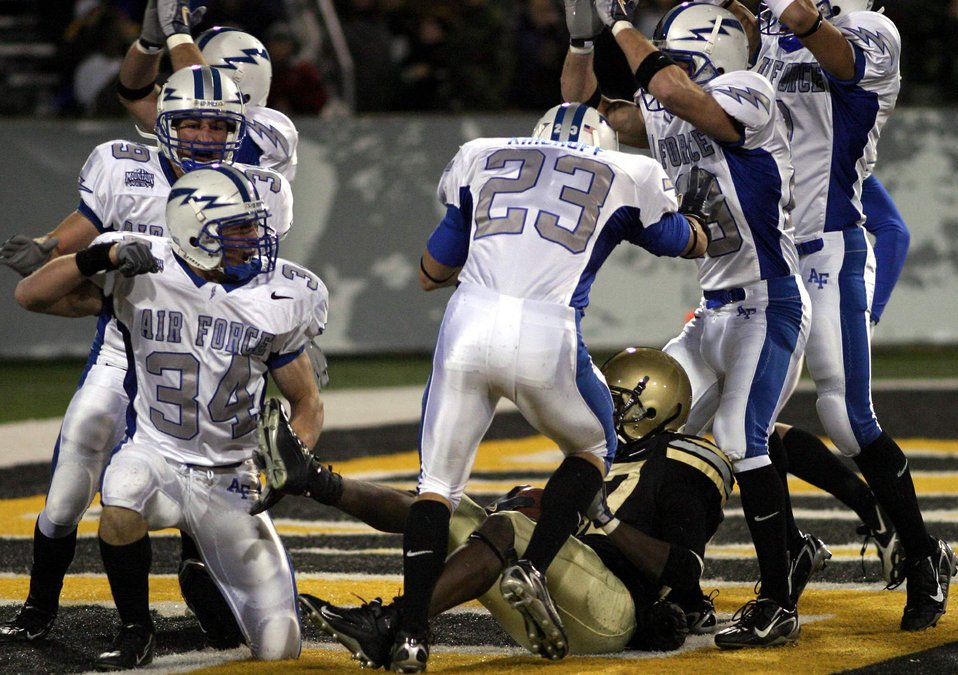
Army/Air Force football game

Falcon special team players Chris Thomas, 34, Aaron Kirchoff, 23, and others, celebrate the safety they scored by tackling Army's Damion Hunter in the end zone Nov. 3 at West Point, N.Y.